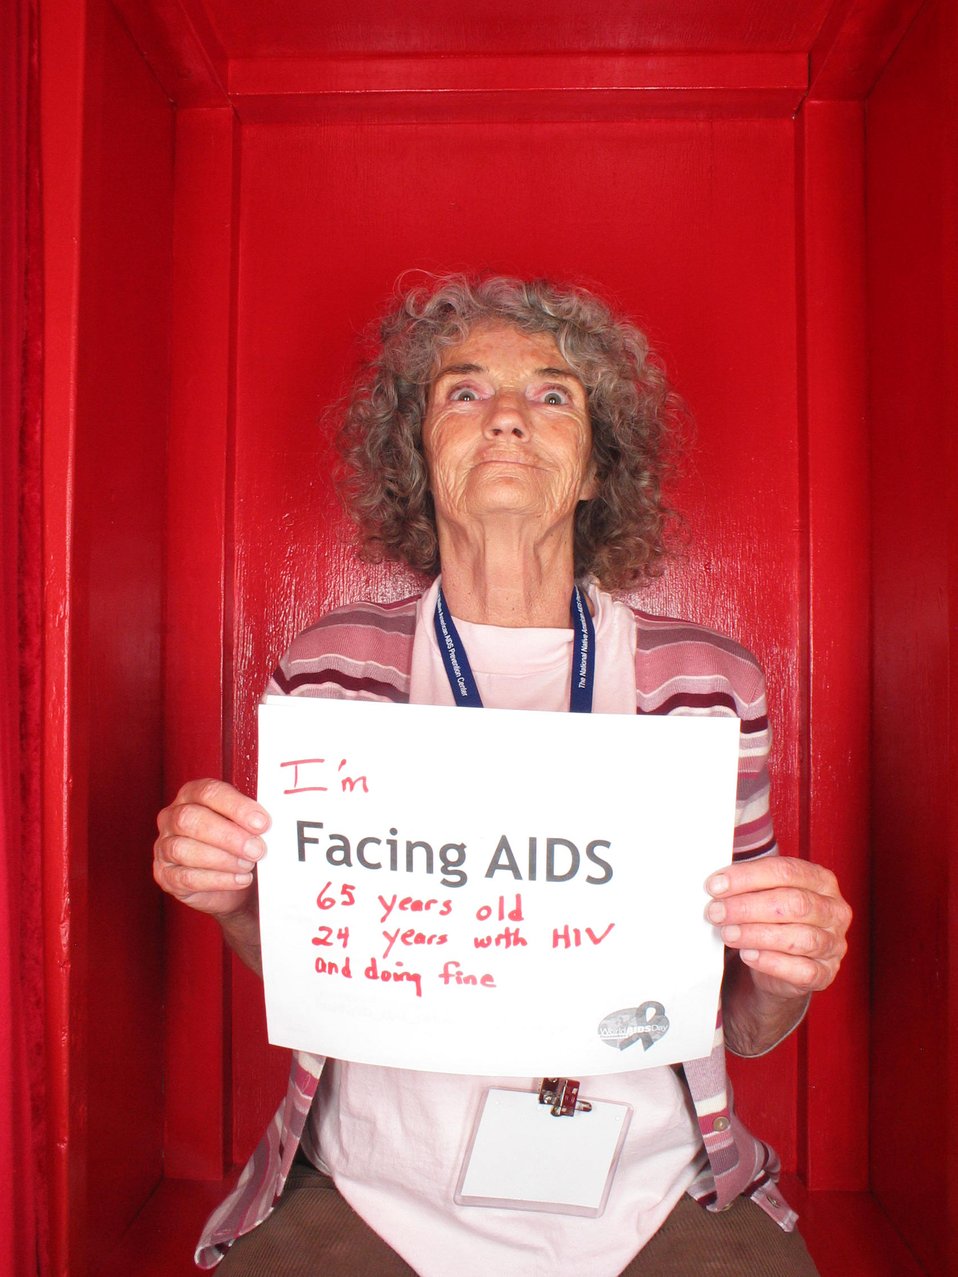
I'm Facing AIDS 65 years old. 25 your with HIV. and doing fine.